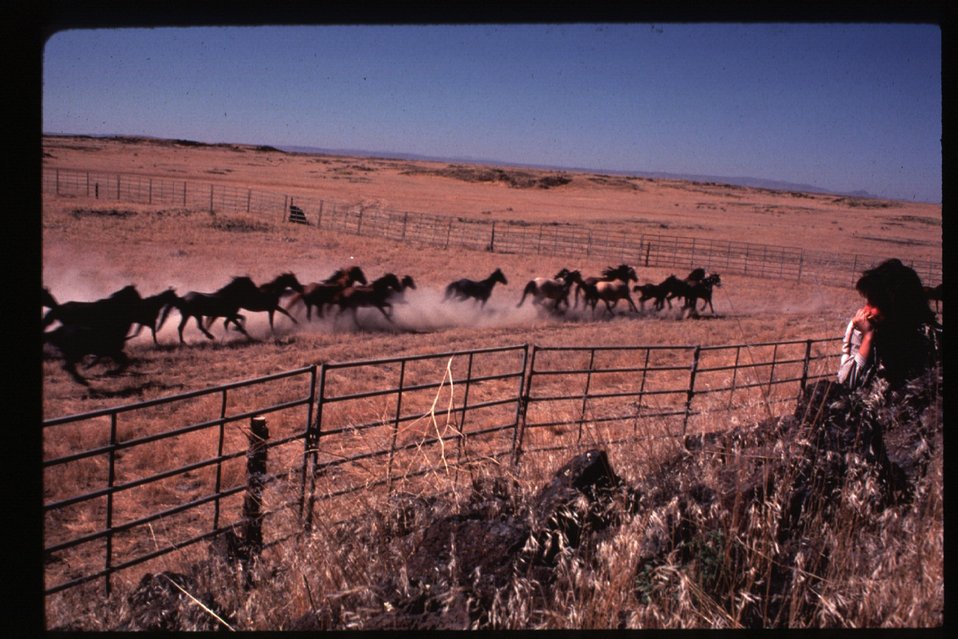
Wild horse roundup Wild Horse and Burro Adoption Program LSRD Lower Snake River District